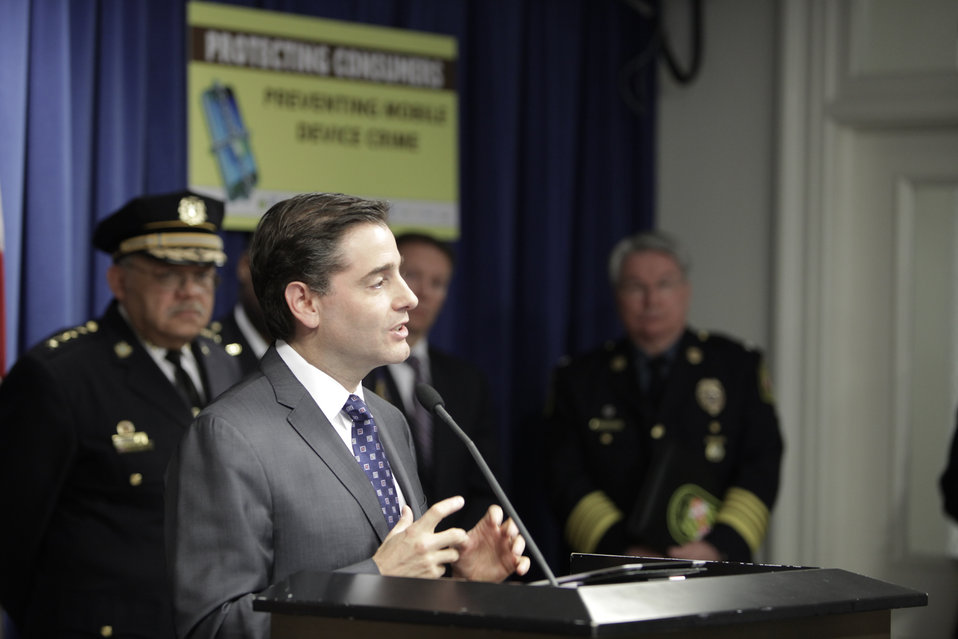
FCC Chairman Genachowski speaks about consumer protection against theft of data and smartphones at the John A. Wilson Building in Washington, DC on April 10, 2012.